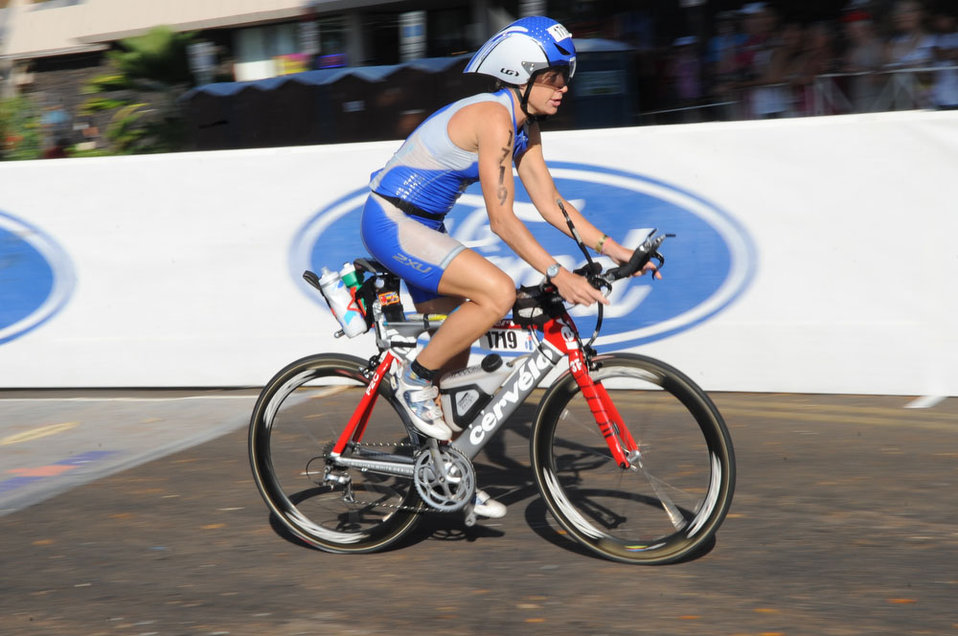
2010 Ironman World Championship

Capt. Jamie Turner speeds by the crowd after transitioning from the 2.4-mile swim to the 112-mile bike race while competing in the 2010 Ironman World Championship Oct. 9, 2010, at Kona, Hawaii. Captain Turner is a C-17 Globemaster III pilot at Joint Base Charleston, S.C. She finished with an overall time of 10:48:31.